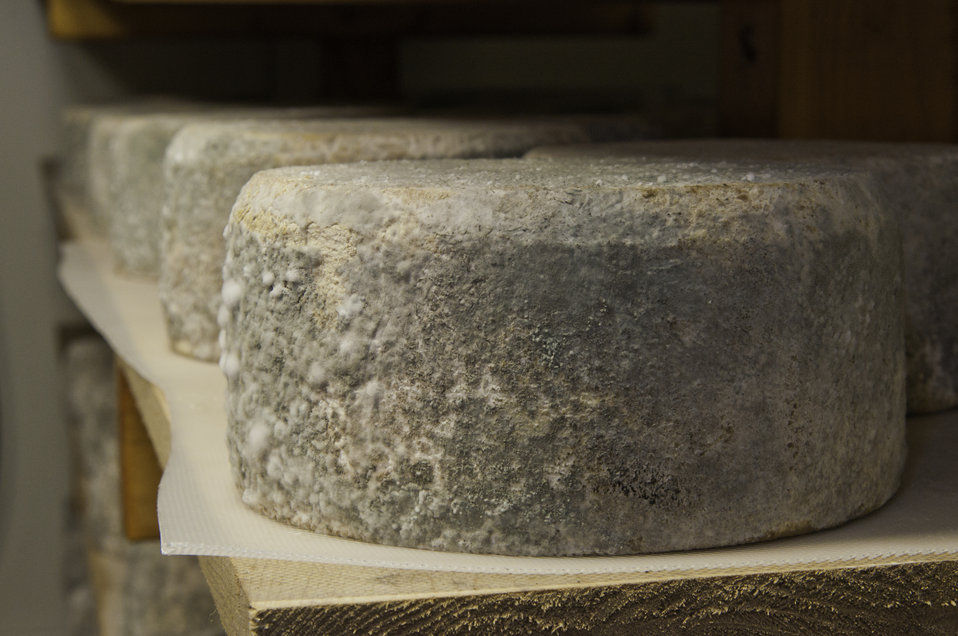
Cheese rounds that have been inoculated with mold cure in the aging room to produce Chapel’s Country Creamery, “Bay Blue” cheese. The dairy produces hand crafted artisanal cheeses with fresh raw milk produced on the dairy’s Grade A dairy farm in Easton, MD. The dairy’s grass fed Jersey and Holstein cows produce high quality milk, rich in cream. The milk is all- natural and contains no synthetic hormones, antibiotics, or chemical compounds. They mentioned that by producing our own cheese from start to finish, we insure the highest quality possible.